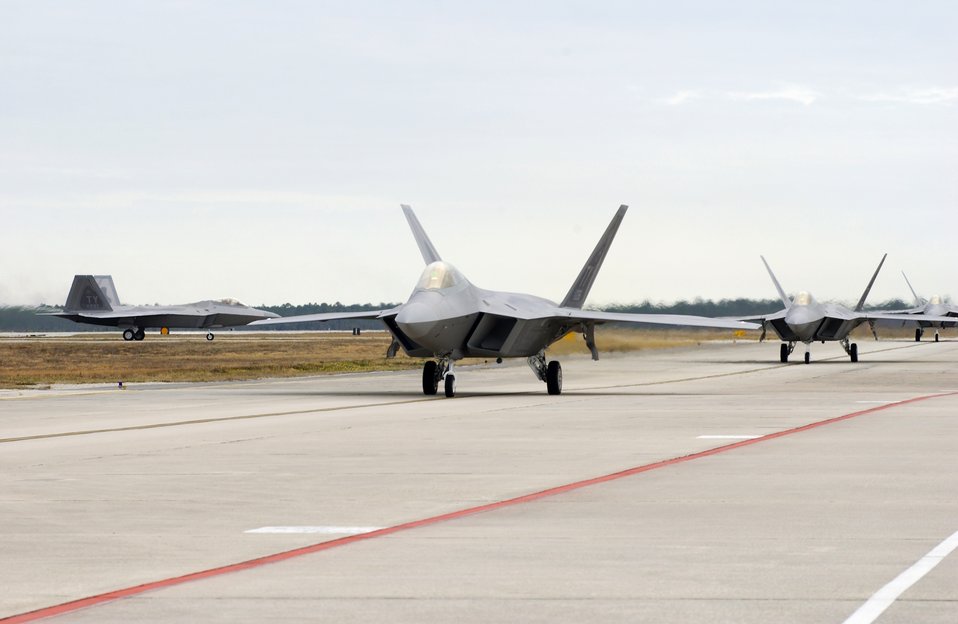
More Raptors have landed

TYNDALL AIR FORCE BASE, Fla. -- Four F/A-22 Raptors taxi on the flightline here Jan. 7 as they arrive at their new home from the production plant in Marietta, Ga. Five new Raptors now call the 43rd Fighter Squadron home, increasing the squadron's inventory to 18 aircraft.